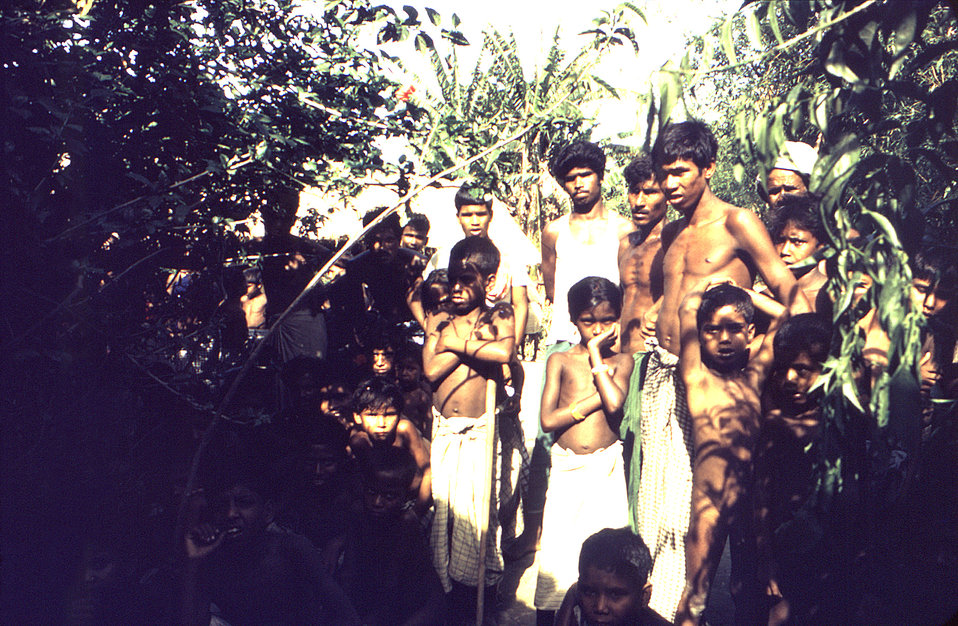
This photograph depicted a group of Bengali men and boys, who were standing amidst an unknown Bengladesh jungle environment. This image is believed to have been taken sometime in the early 1970s during the worldwide smallpox eradication efforts.The Disease